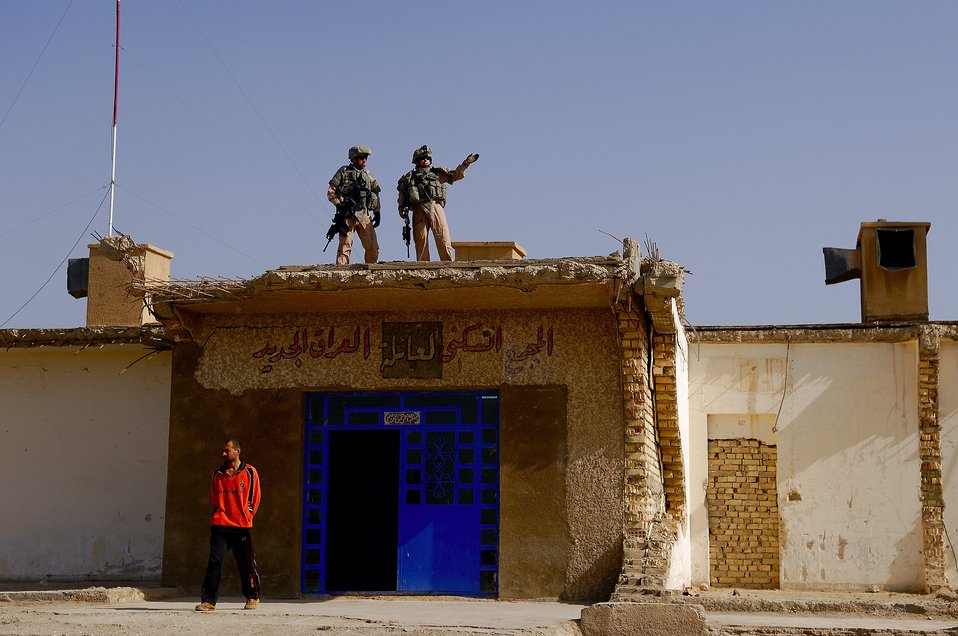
On patrol

Master Sgt. William Schaal (left) and Tech Sgt. Terry Miller check the neighborhood around an Iraqi police station Mar. 3 in the southwest area of Baghdad, Iraq. The two sergeants are assigned to Detachment 3 of the 732nd Security Forces Squadron at Sather Air Base, Iraq. Sergeant Schaal is deployed from 341st Security Forces Squadron, Malmstrom Air Force Base, Mont., and Sergeant Miller is deployed from the 90th Security Forces Squadron, F.E. Warren AFB, Wyo.